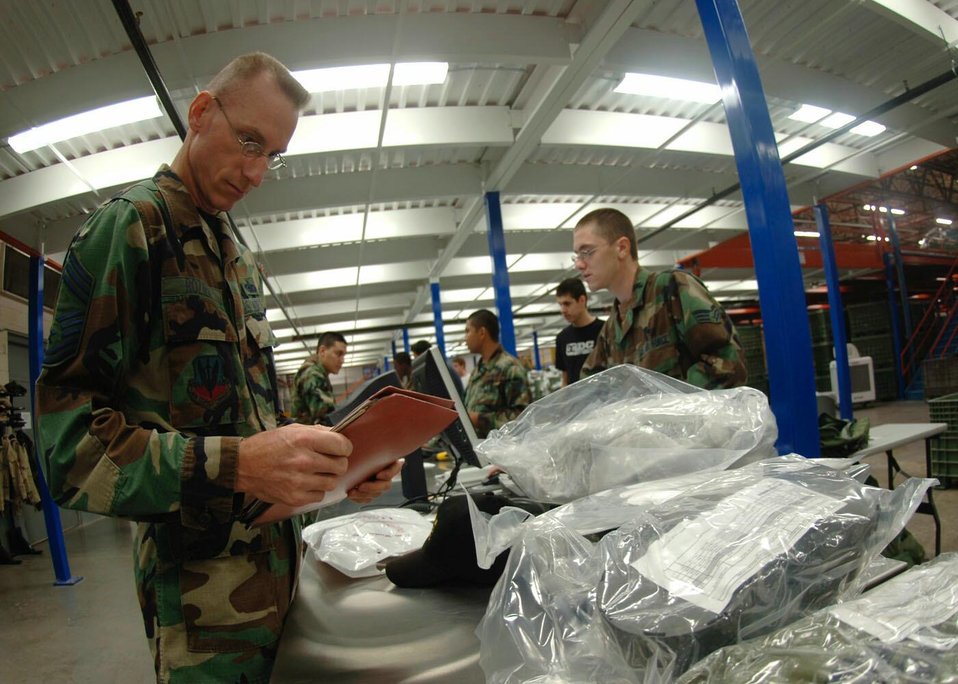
Lining up, moving out

DAVIS-MONTHAN AIR FORCE BASE, Ariz. -- Chief Master Sgt. William Rozier (left) is issued gear from Senior Airman Wesley Caldwellas on the deployment line here in preparation for an upcoming air and space expeditionary force cycle. The chief will join about 1,500 Airmen deploying in support of the war on terrorism. Chief Rozier is the 355th Mission Support Group superintendent, and Airman Caldwellas is assigned to the 355th Logistics Readiness Squadron.